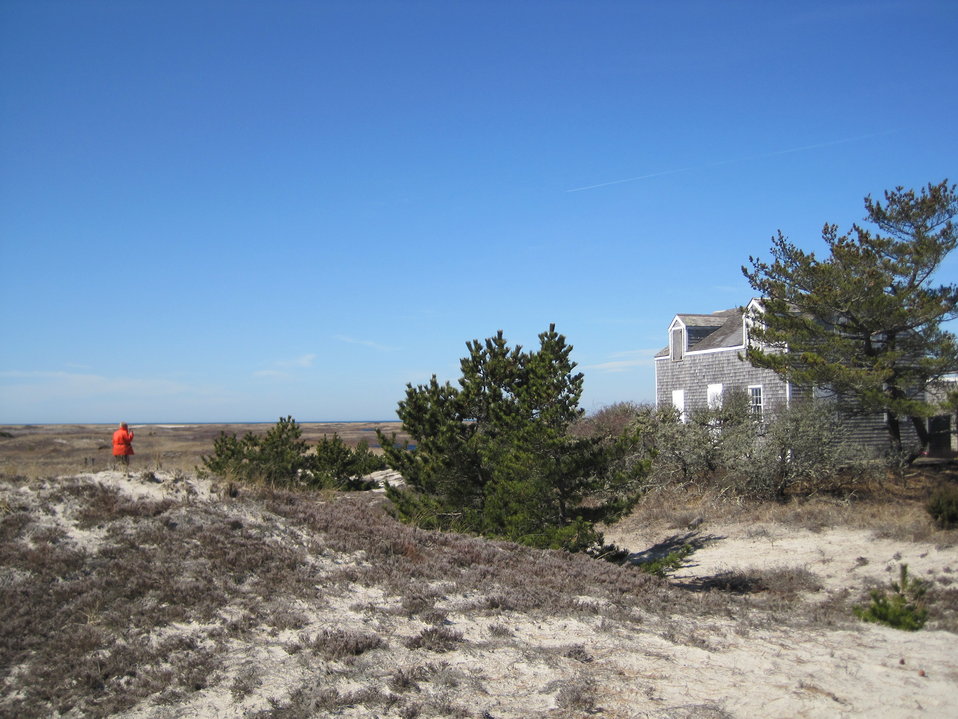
Light keeper's house

The old light keeper's house was rehabilitated using American Recovery and Reinvestment Act funds.

Credit: Keith Shannon/USFWS

Monomoy National Wildlife Refuge is part of the Eastern Massachusetts National Wildlife Refuge Complex.